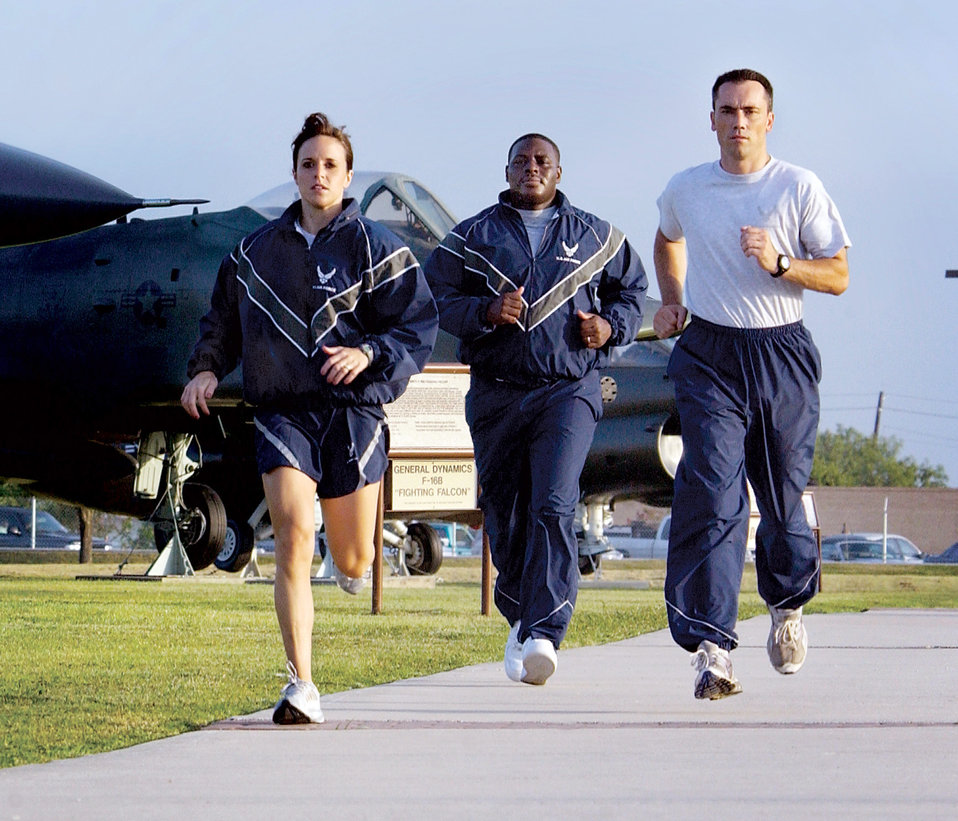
Deployed Airmen getting new PT uniform first

LACKLAND AIR FORCE BASE, Texas -- First Lt. Megan Schafer (from left), Staff Sgt. Antwain Wright and Master Sgt. Scott Wagers show off different combinations of the new physical training uniform while jogging here during the wear-test phase. The new uniform will be issued to Airmen serving in Southwest Asia first and phased into the rest of the force over the next three years.